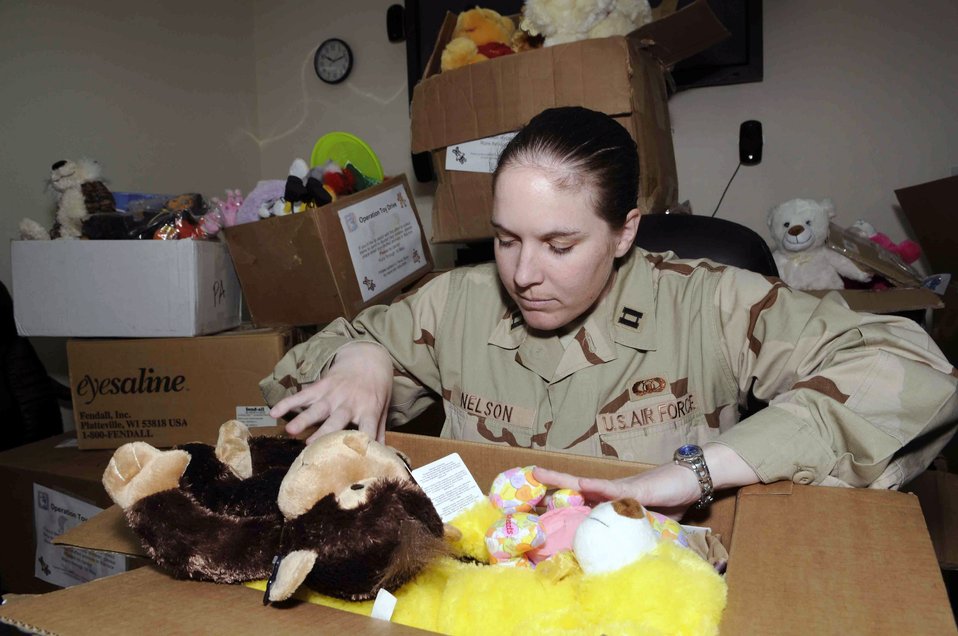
Operation Toy Drive to bring joy to Iraqi orphans

Capt. Nora Nelson takes inventory of the toys that have been collected in an initiative spurred by her niece and nephew to collect toys and games for Iraqi orphans May 16 at a Southwest Asian air base.